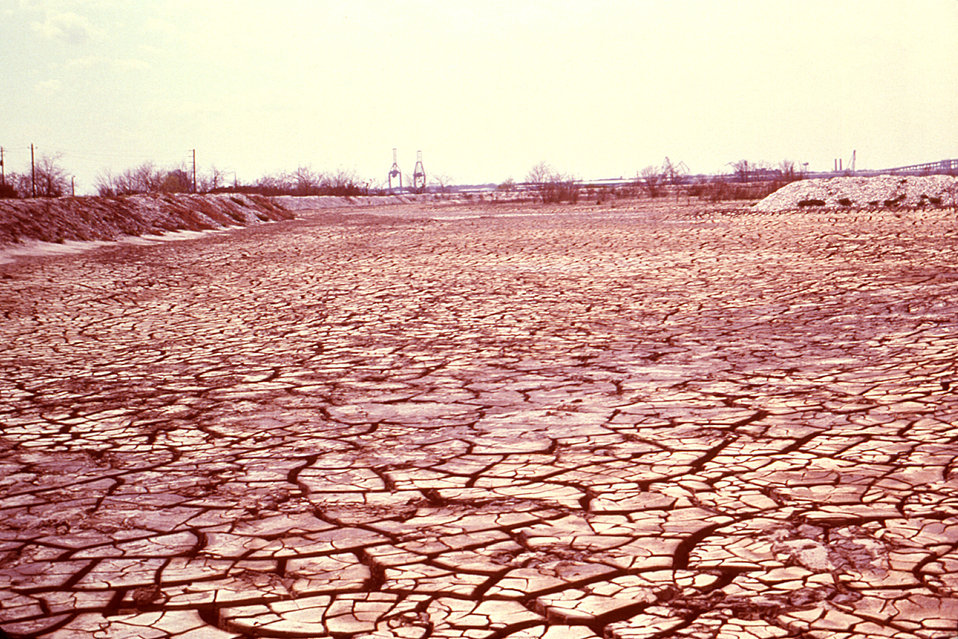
This 1978 photograph depicted the cracked surface of dredged spoils deposits, which when wet, became the oviposition, and breeding site for a population of Aedes sollicitans mosquitoes.